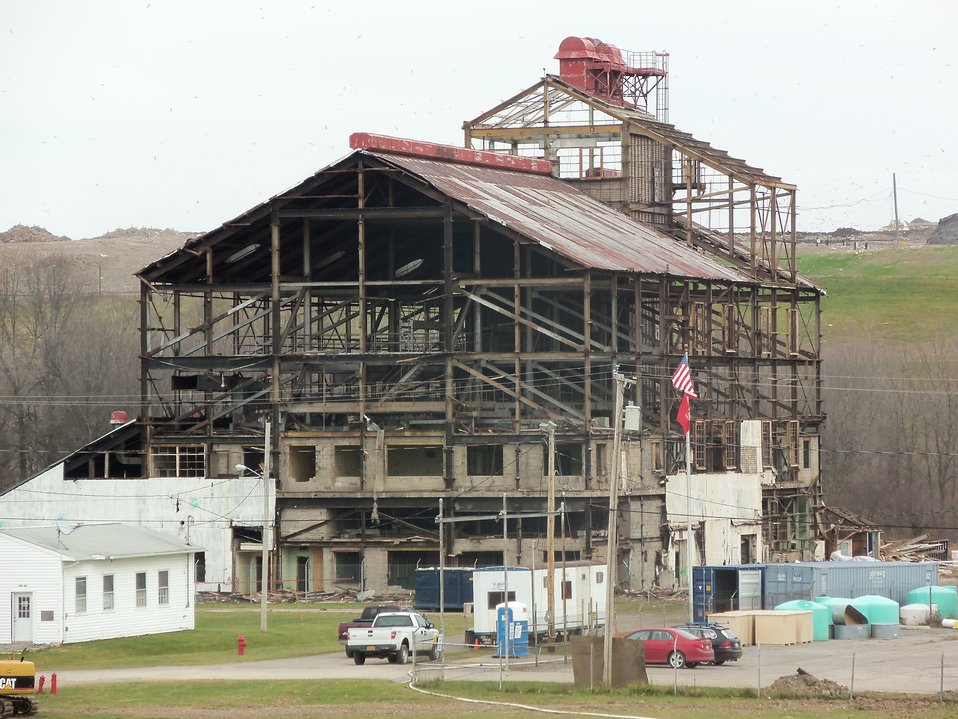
BLDG 401 SHELL WITH FLAG

Activities from the Niagara Falls Storage Site, which is associated with the former Lake Ontario Ordnance Works. Formerly Utilized Sites Remedial Action Program (FUSRAP), a program initiated in 1974 to identify, investigate and clean up or control sites that were part of the Nation's early atomic energy and weapons program. Activities at the sites that are eligible for FUSRAP were conducted by Manhattan Engineer District (MED) or the Atomic Energy Commission (AEC), both predecessors of the Department of Energy (DOE). The U.S. Army Corps of Engineers was assigned management of FUSRAP by Congress in 1997.